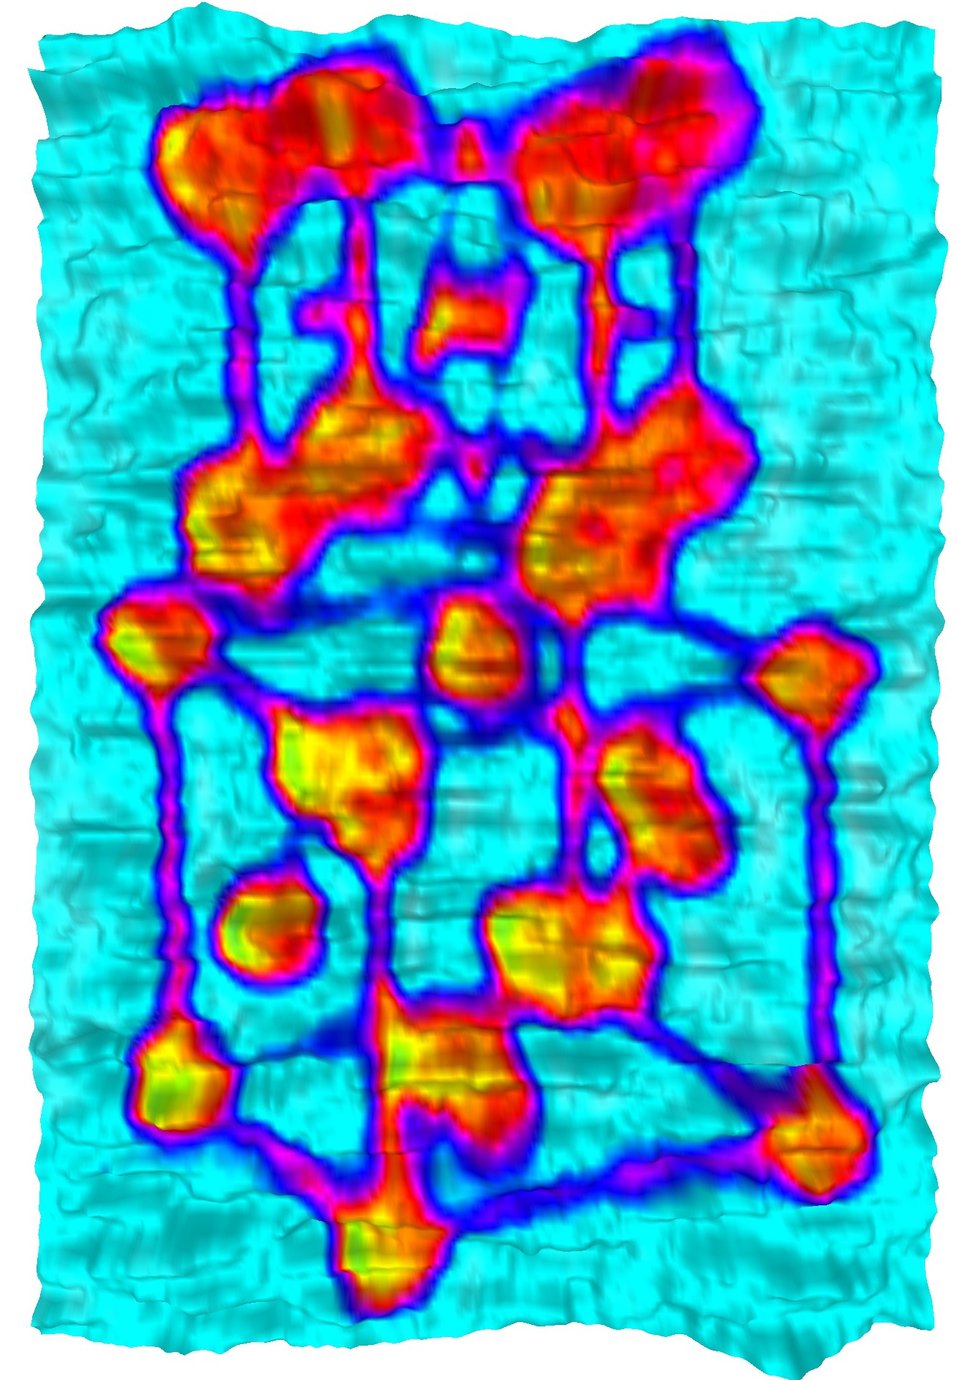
Nanoscale Vise